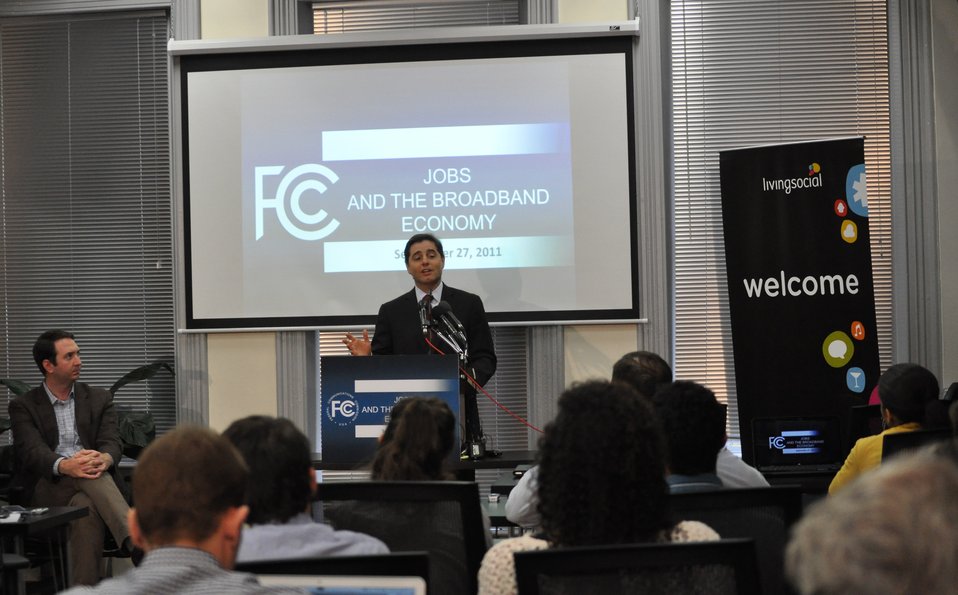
Jobs and the Broadband Economy

FCC Chairman Genachowski